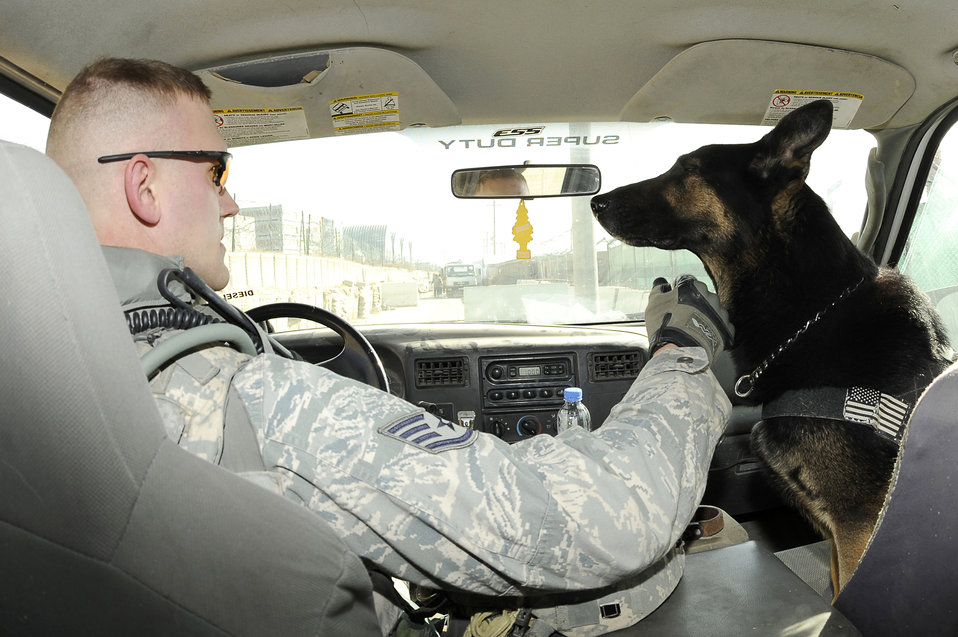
It's a dog's life at Bagram

Sgt. Mitchell Stein and his K-9 partner, Artus, drive back from an entry control point on Bagram Airfield, Afghanistan, Feb. 2, 2010. Sergeant Stein and Artus are assigned to the 455th Expeditionary Security Forces Squadron, and are deployed from Spangdahlem Air Base, Germany.